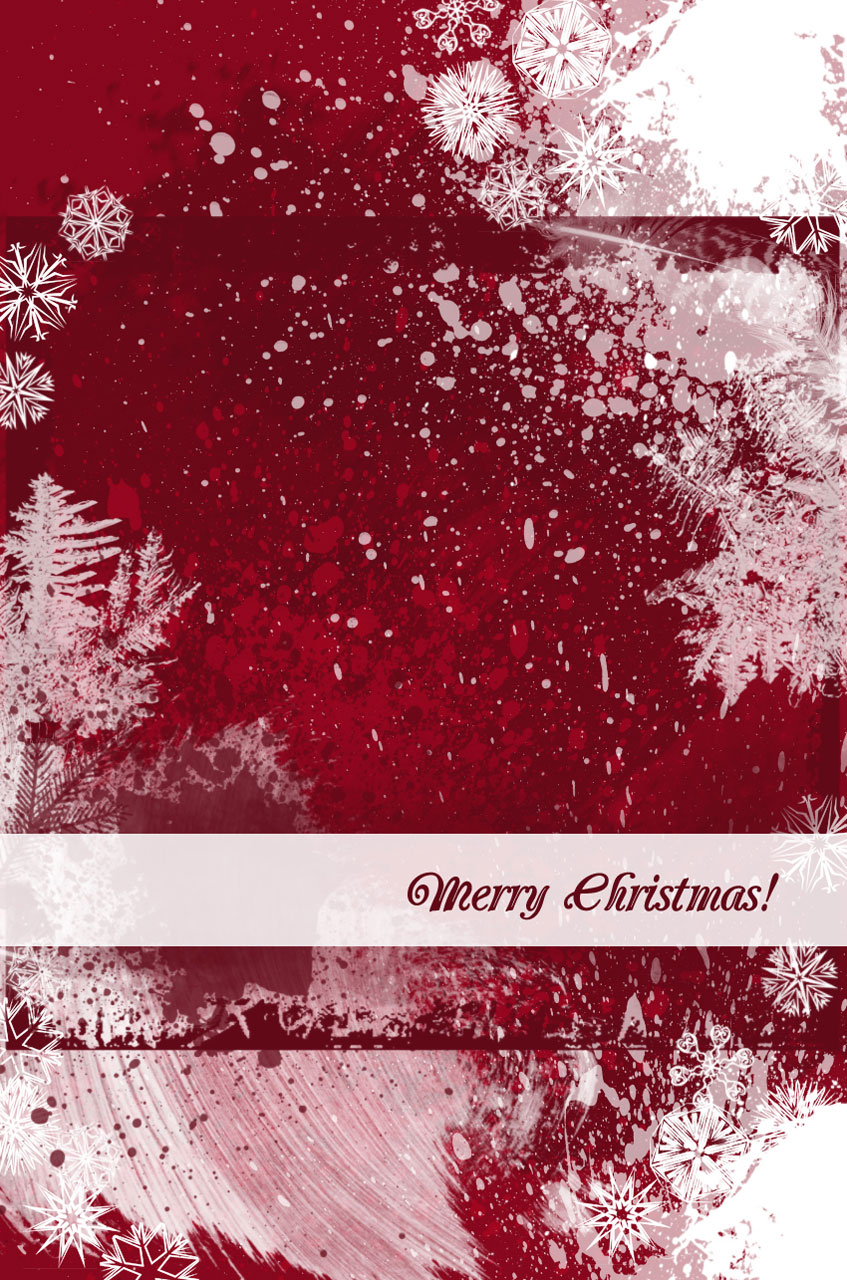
Christmas background

Noisy, grunge style christmas background..